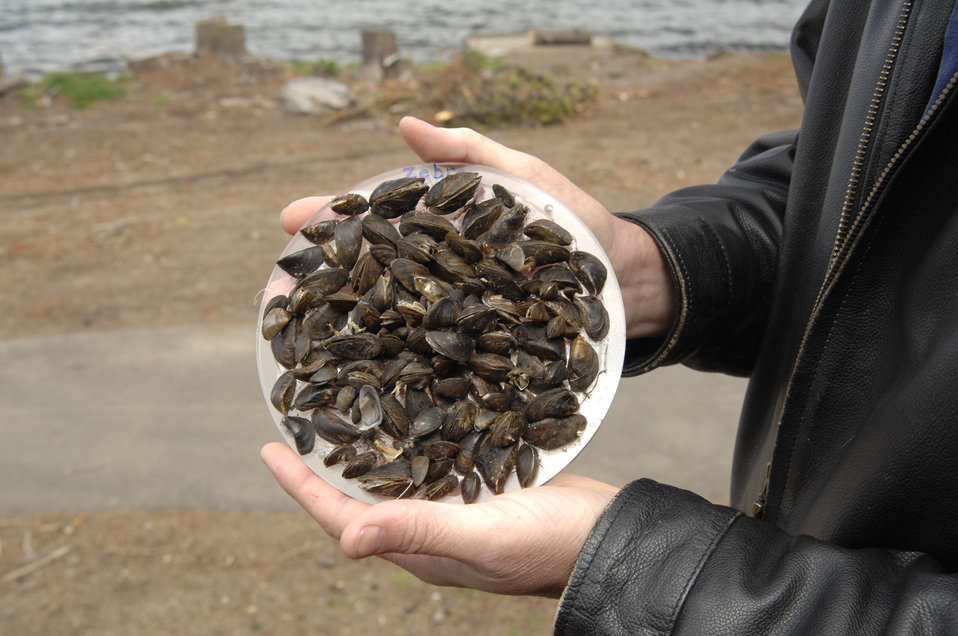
The Zebra mussel is an aquatic invasive species found at Diamond Lake in Umpqua National Forest in Oregon on June 10, 2008. These mussels attach to hard surfaces such as pipes, screens, rock, logs, boats, and ropes. A species is considered invasive it is nonnative to the ecosystem and its introduction causes or is likely to cause economic or environmental harm or harm to human health. The goal of the U.S. Department of Agriculture’s (USDA) Forest Service (FS) invasive species program is to reduce, minimize, or eliminate the potential for introduction, establishment, spread, and impact of invasive species across all landscapes and ownerships.